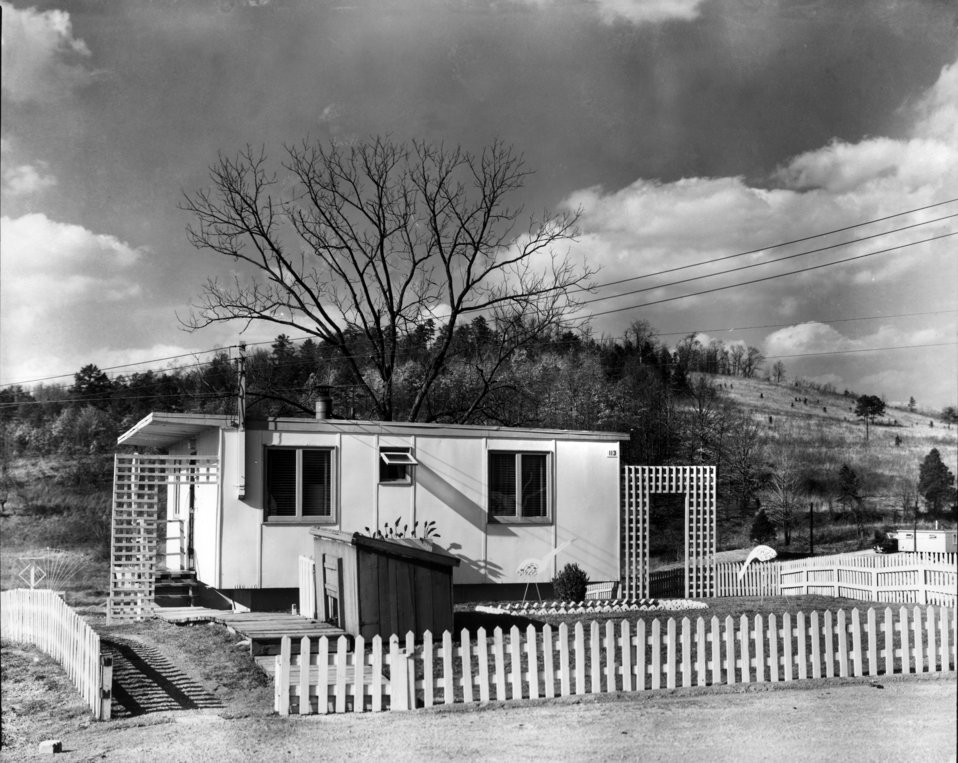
Oak Ridge Housing 'Flat Top'

MED94 DOE photo by Ed Westcott

Oak Ridge Housing 'Flat Top' Oak Ridge Tennessee 1944